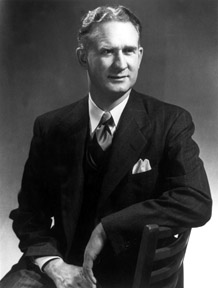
Portrait of Walter H. Zinn.